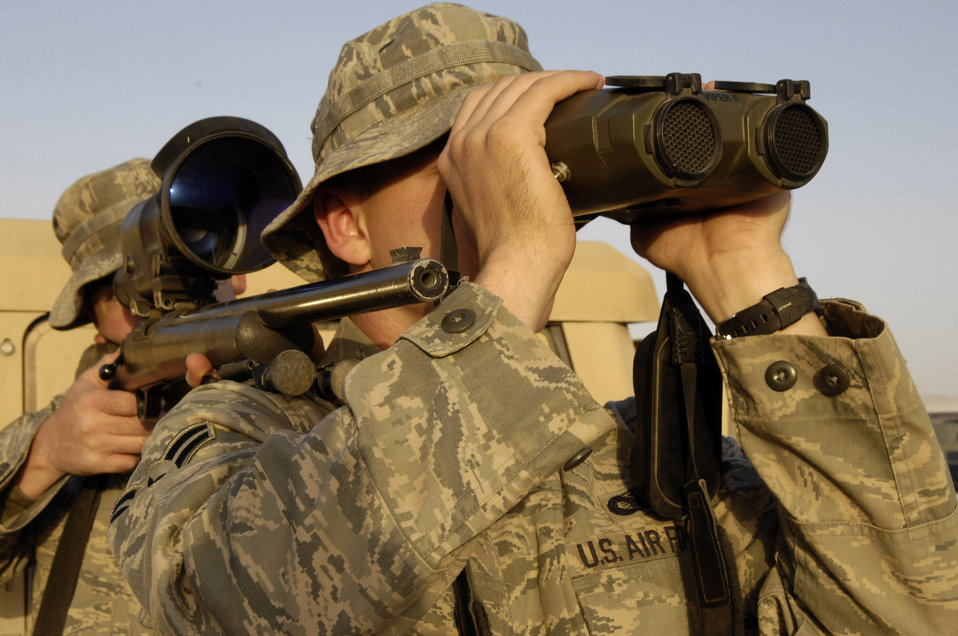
Sniper training

Staff Sgt. Curtis Huffman and Airman 1st Class Matt Leeper demonstrate a buddy sniper position as one of the ways to set up an attack Nov. 14 in Iraq. The 506th Expeditionary Security Forces Squadron at Kirkuk Air Base, Iraq, houses a close precision engagement team of Air Force snipers who train as anti-sniper teams to target terrorist and insurgent snipers attacking U.S. and coalition forces in the area. Airman Leeper and Sergeant Huffman are from the 354th Security Forces Squadron at Eielson Air Force Base, Alaska, deployed to Kirkuk Air Base, Iraq, as members of the 506th Expeditionary Security Forces Squadron.